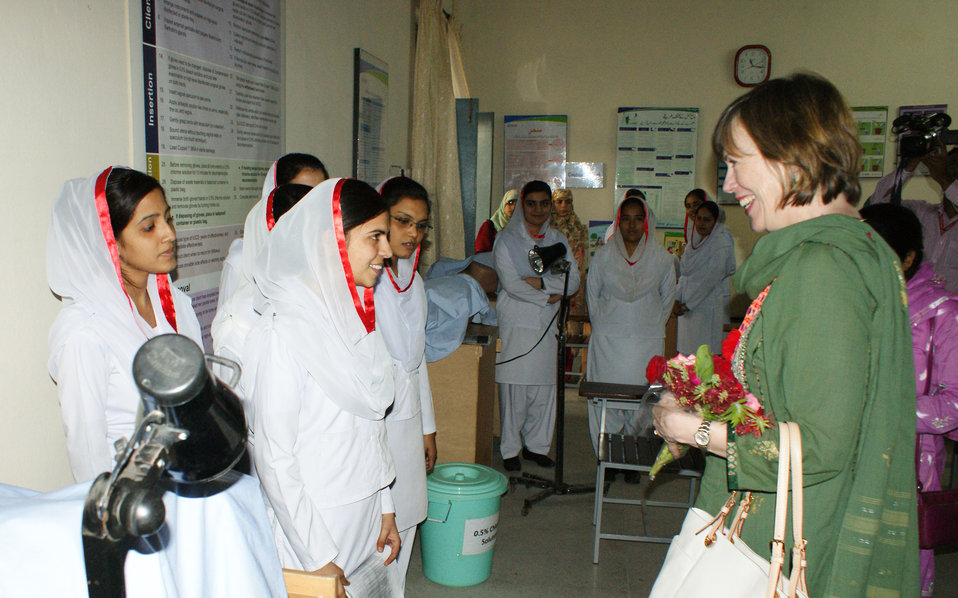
Lady Health Workers

April 15, 2011 - Dr. Marilyn Wyatt, wife of U.S. Ambassador Cameron Munter, visits District Headquarter Hospital Jhelum to participate in a training by Lady Health Workers for local women about maternal and children's health.